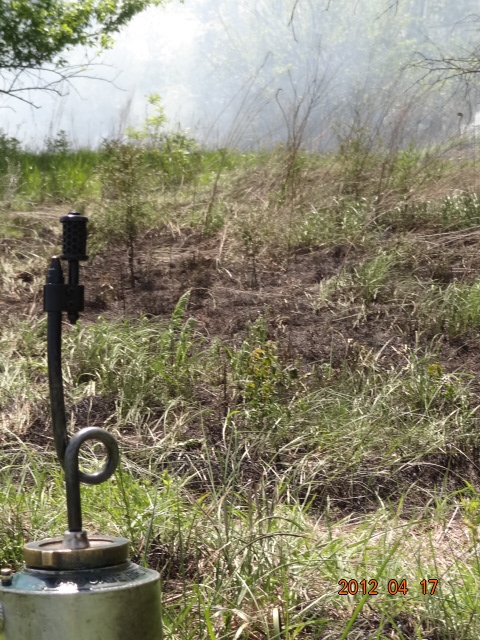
Fire Management in the Tall-grass Prairie

Fire is used as a management tool in the Tall-grass Prairie.